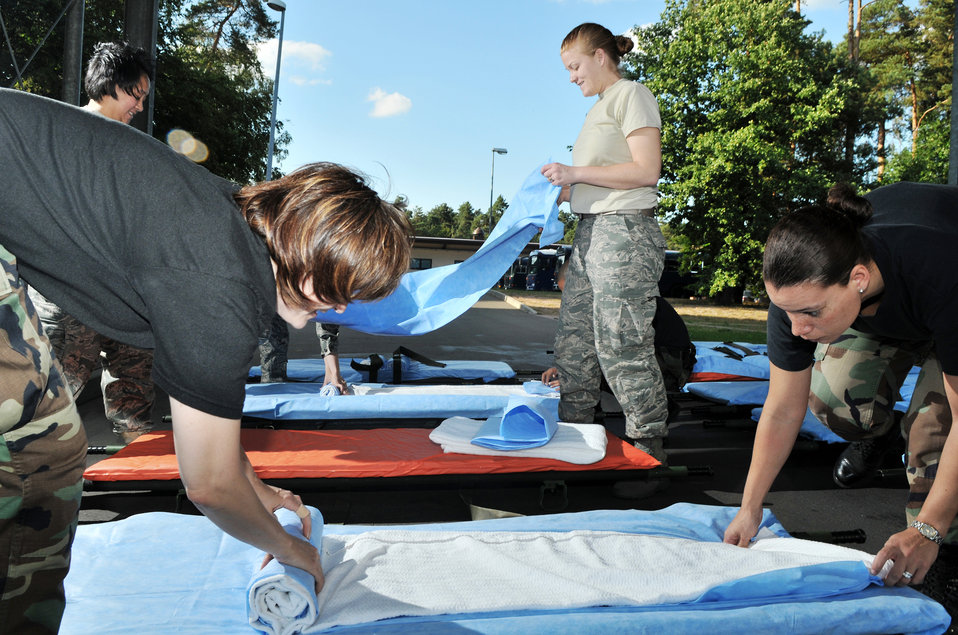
Aeromedical staging facility staff to reach major milestone in warrior care

Tech. Sgt. Christina Werkin (from left to right starting in the front) , Tech. Sgt. Laura Small, Staff Sgt. Frances Sturdevant and Senior Airman Lisa Kennedy prepare gurneys Aug. 27, 2009, Ramstein Air Base, Germany. The gurneys will be used to transport wounded warriors to an aircraft taking them to Walter Reid Medical Center in Washington, D.C., for further medical treatment. The Airmen are 86th Contingency Aeromedical Staging Facility medical technicians.